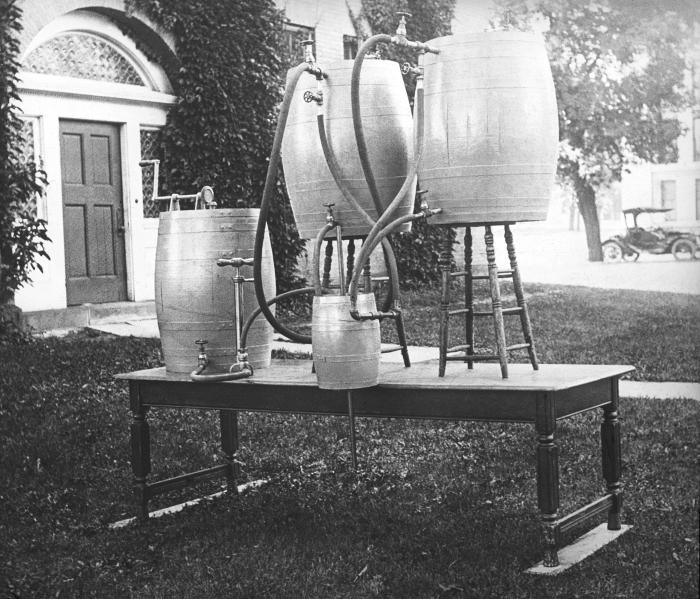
This 1910 photograph depicted a portable emergency hypochlorite plant that was the property of the Minnesota State Board of Health, Division of Sanitation. The photo presented a general view of the original plant, and was one of a series of instructional photos used by the Minnesota Board of Health to train public health workers.